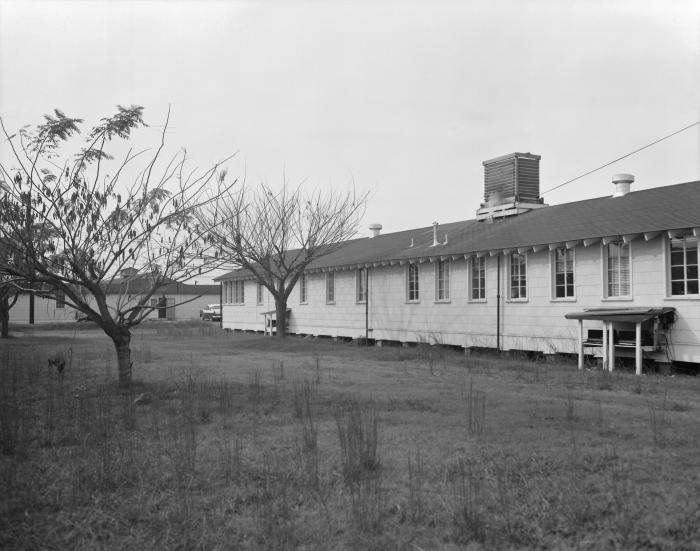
This photograph, taken in 1957 on the Centers for Disease Control's Chamblee Campus, showed rows of laboratory facilities as part of the location's Lawson Facilities.